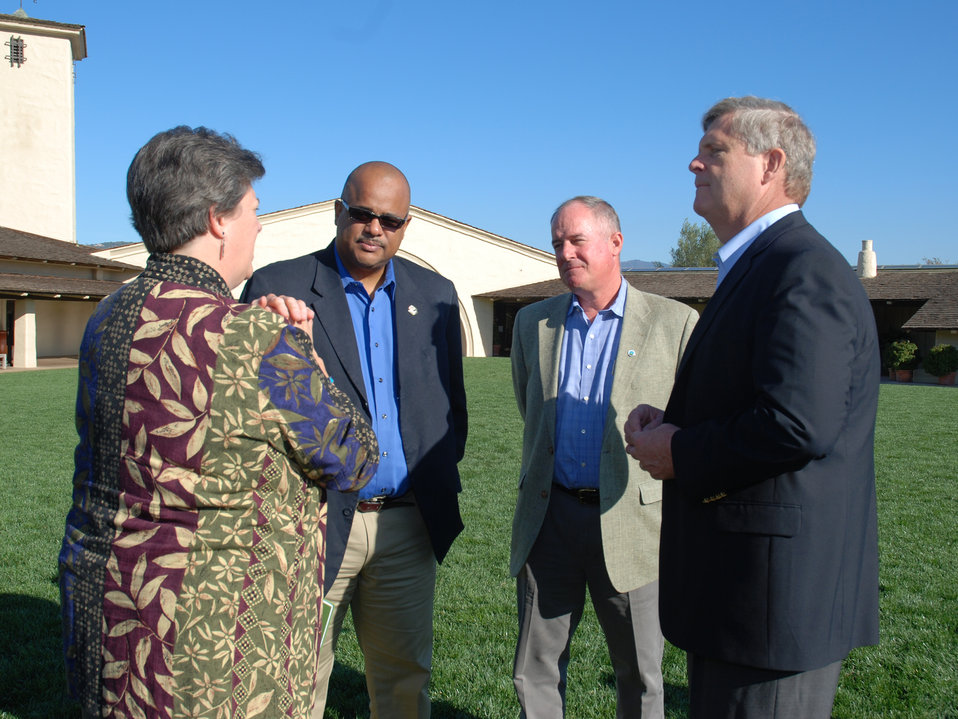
Agriculture Secretary Thomas Vilsack, right, talks with (L to R)
U.S. Department of Agriculture (USDA), Rural Development (RD), Glenda Humiston,
USDA Natural Resources Conservation Service (NRCS), Carlos Suarez, and
USDA Farm Service Agency (FSA), Val Dolcini at the California wine growers’ roundtable at the Mondavi Winery in Napa, CA on Sunday, Nov. 17, 2013.